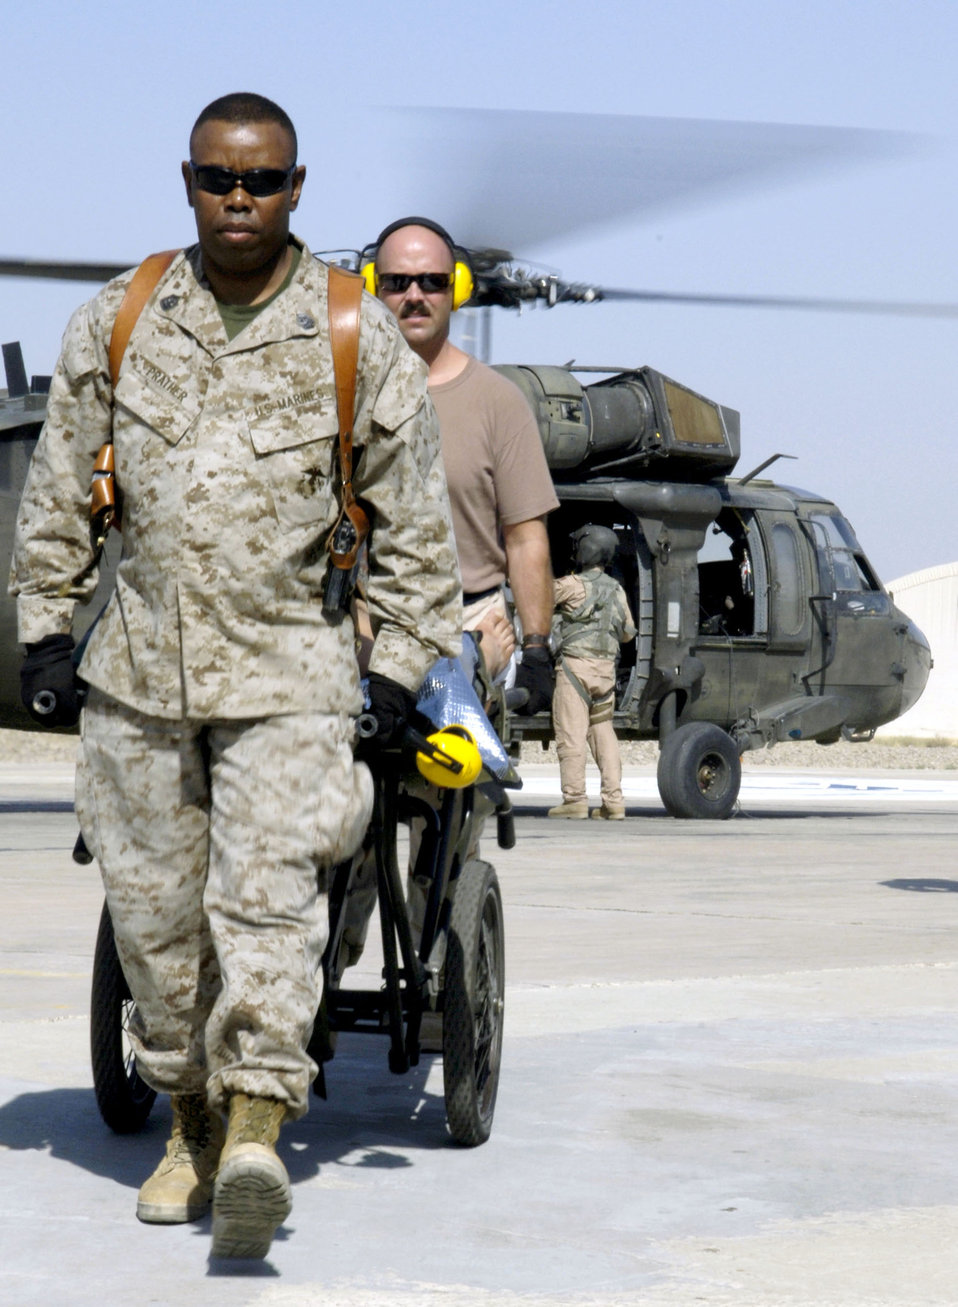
Specialized care

Master Gunnery Sgt. Timothy Prather and Master Sgt. Ronald Gustafson assist with unloading medevac passengers off a UH-60 Black Hawk at the Air Force Theater Hospital at Balad Air Base, Iraq, on Aug. 2. The hospital provides Level 1 trauma and specialized medical care. Sergeant Prather is with the 332nd Expeditionary Medical Group.